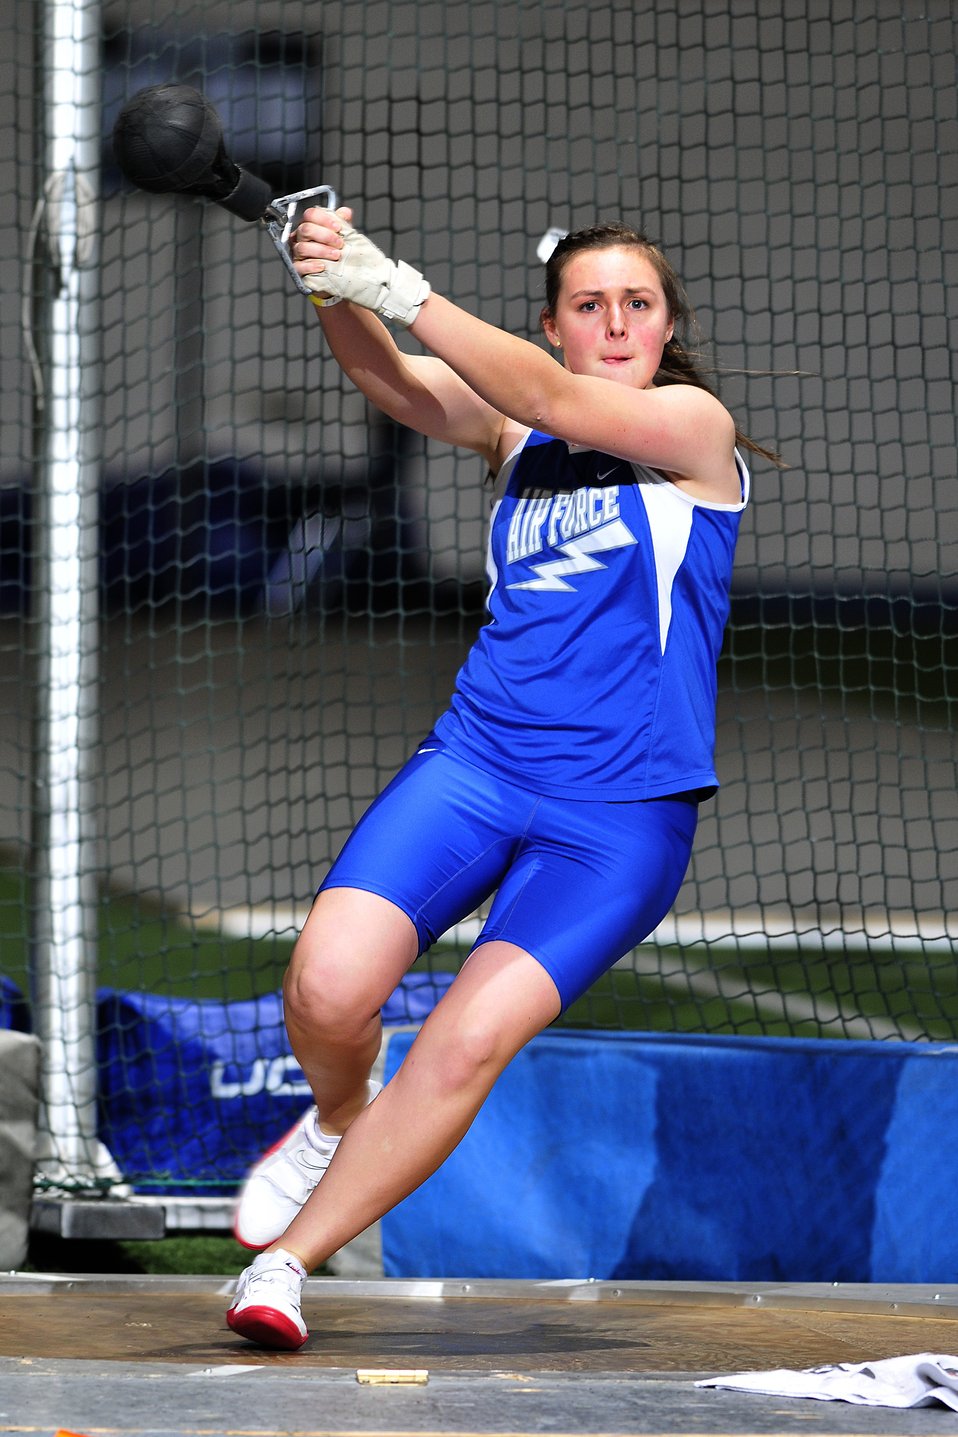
Falcons Set Records

Freshman Becca Bauman throws a weight during a track and field meet Jan. 14, 2011, at the Air Force Academy Cadet Field House. Bauman placed 11th in both the weight throw and shot put events.